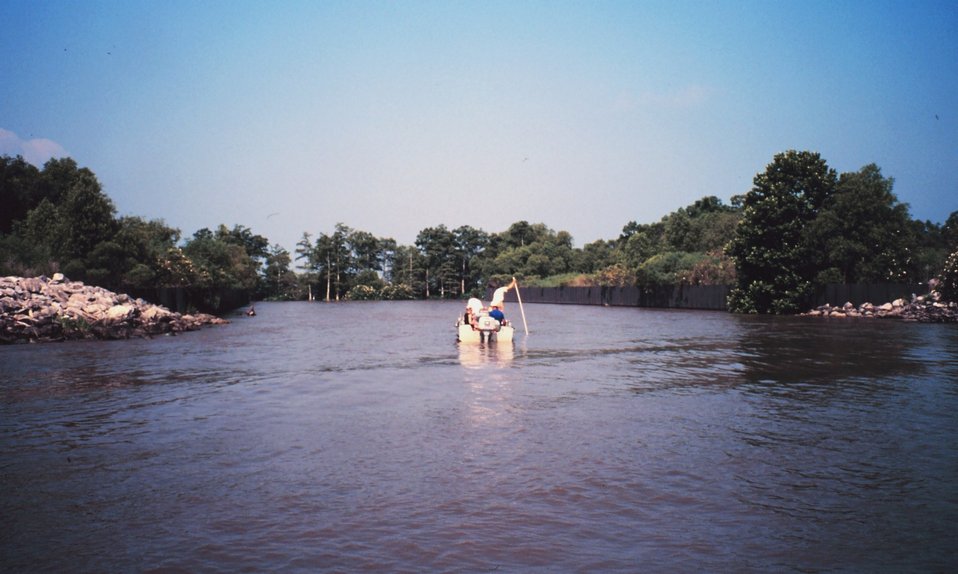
Cut through Mississippi River levee to allow fresh water to flow into adjacent cypress swamp.